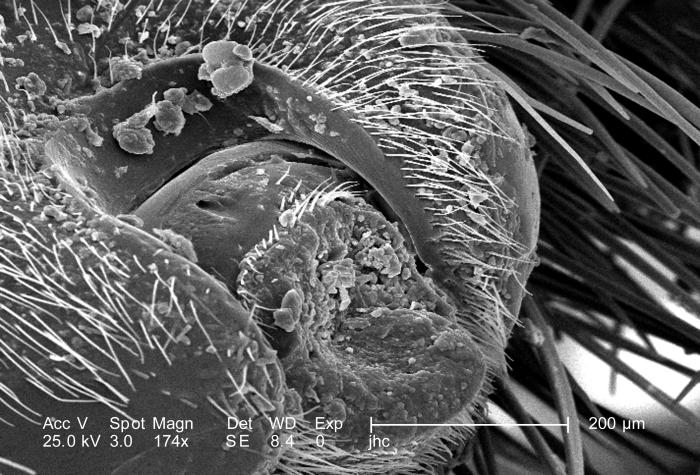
Moderately magnified 174X under a scanning electron micrograph (SEM), the morphologic details of a female velvet wasp's, Dasymutilla sp., distal abdomen were revealed from which her stinger will emerge when she's threatened. See PHIL 9894, which depicts a female velvet ant's stinger fully exposed after having been coxed from the abdomen prior to processing. Note the presence of sensorial 'hairs' upon the surface of the exoskeleton, which are really not hairs as in the mammalian sense, i.e., composed of keratin, but chitinous extensions composed of the same protein as that of the exoskeleton itself.